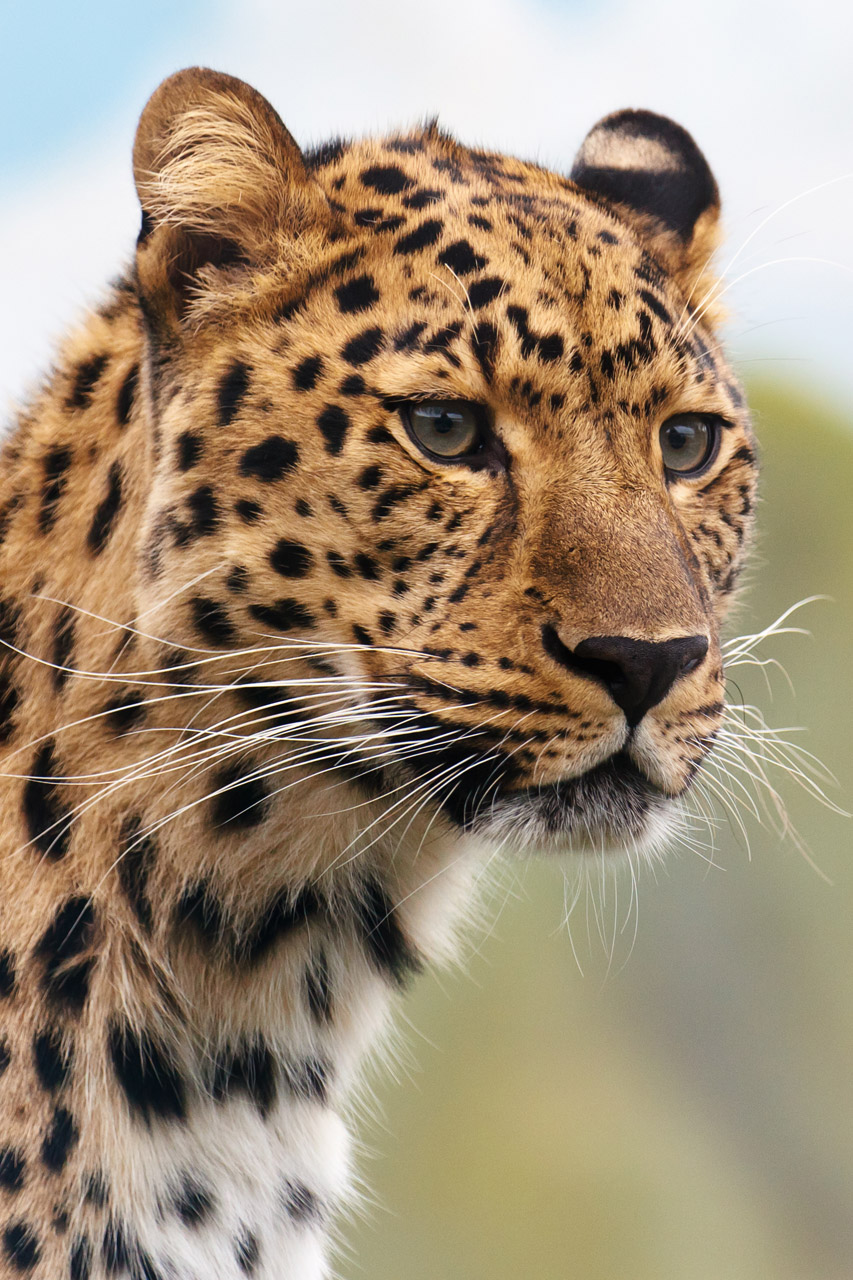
Leopard's head

Portrait of a leopard.